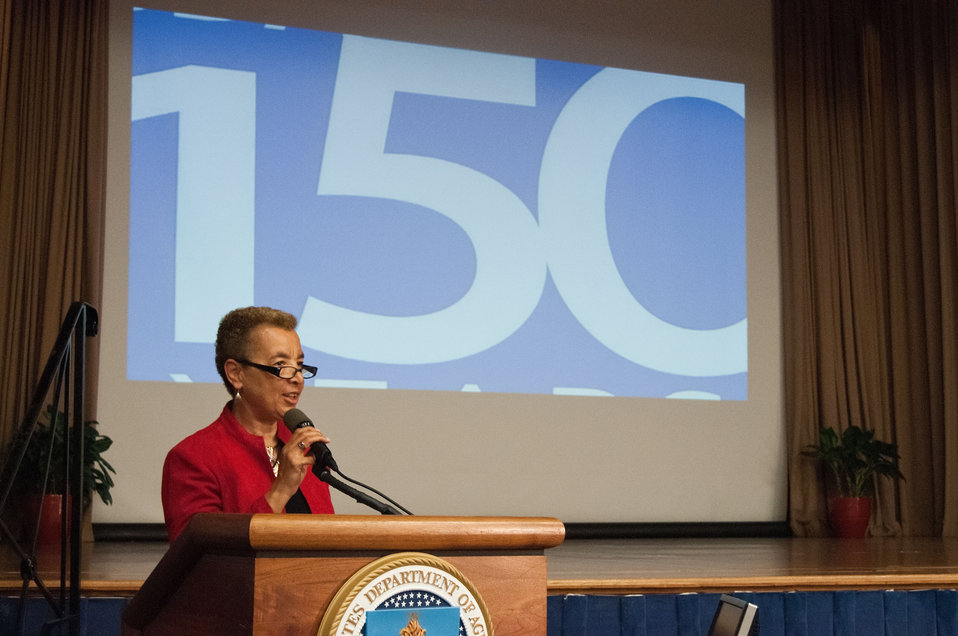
Sharon Nance, National, Lesbian, Gay, Bisexual and Transgender (LGBT) Special Emphasis Program Manager (SPEM), Natural Resources Conservation Service introduced a video montage created by Bill Aley, National LGBT Co-SEPM, Animal and Plant Health Inspection Service at the LGBT Pride Observance, “The Sum of Us: Lesbian, Gay, Bisexual and Transgender Pioneers” at the United States Department of Agriculture in Washington, D.C., Thursday, June 7, 2012.